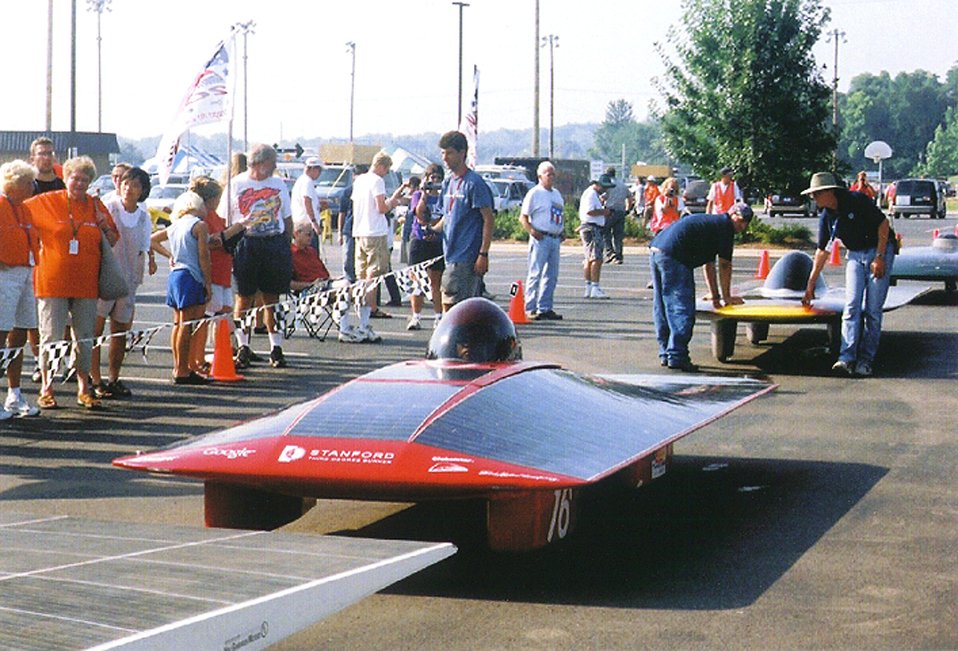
THE STANFORD UNIVERSITY SOLAR CAR ENTRY IN THE SOLAR CHALLENGE 2001.

THE AMERICAN SOLAR CHALLENGE (SUNRAYCE) 2001, THE LONGEST SOLAR CAR RACE IN THE WORLD, IS A BIENNIAL EDUCATIONAL SPORTING EVENT IN WHICH UNIVERSITY TEAMS, COMPANIES, AND CLUBS FROM AROUND THE WORLD COMPETE TO BUILD AND RACE SOLAR POWERED CARS ACROSS THE UNITED STATES. THIS YEAR THE RACE BEGAN IN CHICAGO, ILLINOIS ON JULY 15, 2001 AND WAS COMPLETED ON JULY 25, 2001 IN CLAREMONT, CALIFORNIA, TRAVELING ALL ALONG OLD ROUTE 66.